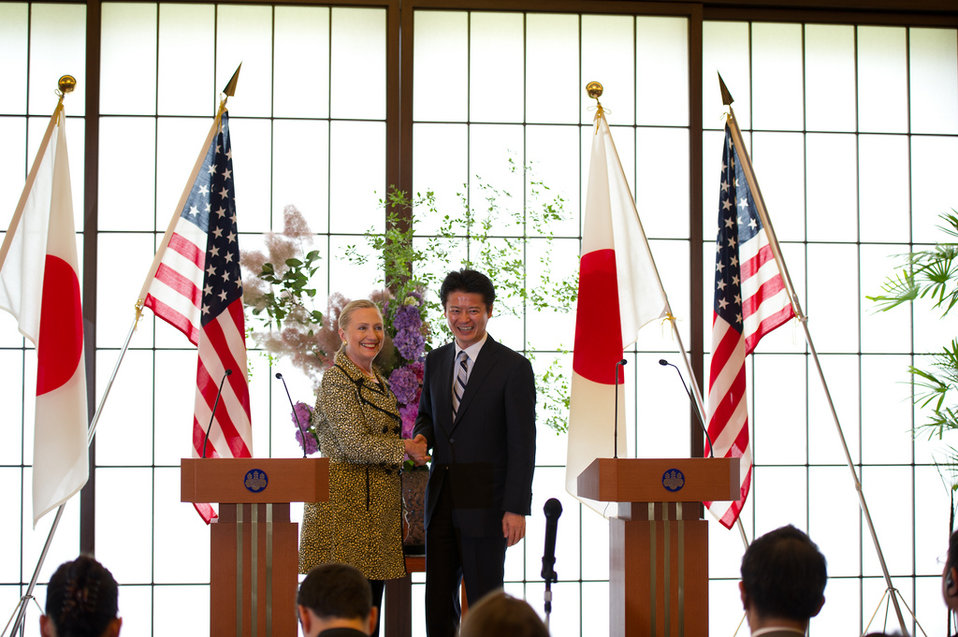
Secretary Clinton and Japanese Foreign Minister Gemba Shake Hands

U.S. Secretary of State Hillary Rodham Clinton and Japanese Foreign Minister Koichiro Gemba shake hands after holding a joint press conference after the Tokyo Conference on Afghanistan in Tokyo, Japan, on July 8, 2012.